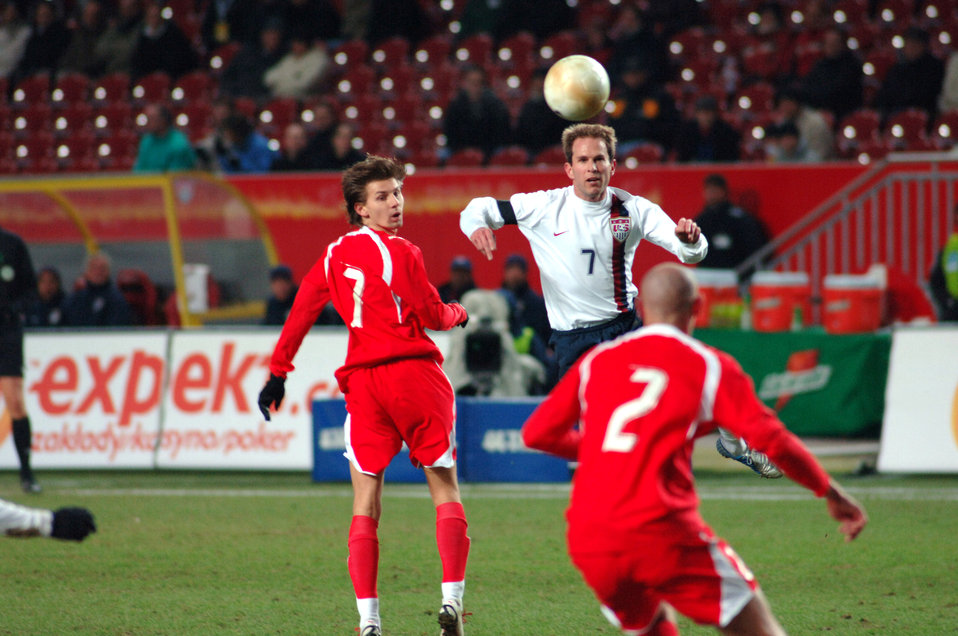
U.S. Men's National Soccer Team match

American soccer player Eddie Lewis directs the ball forward with a